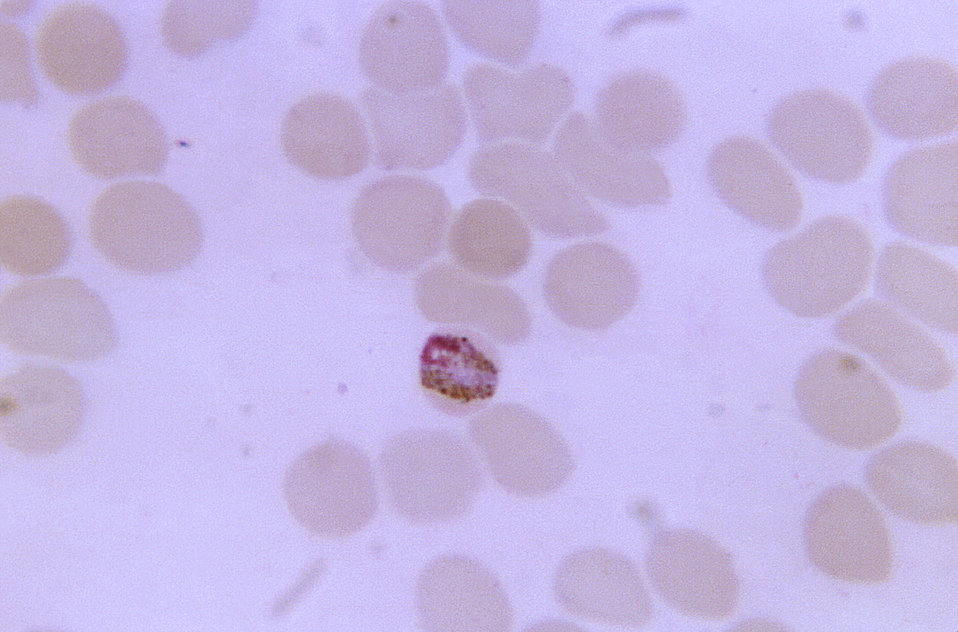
This thin film blood smear micrograph depicts a mature, band-form Plasmodium malariae trophozoite.